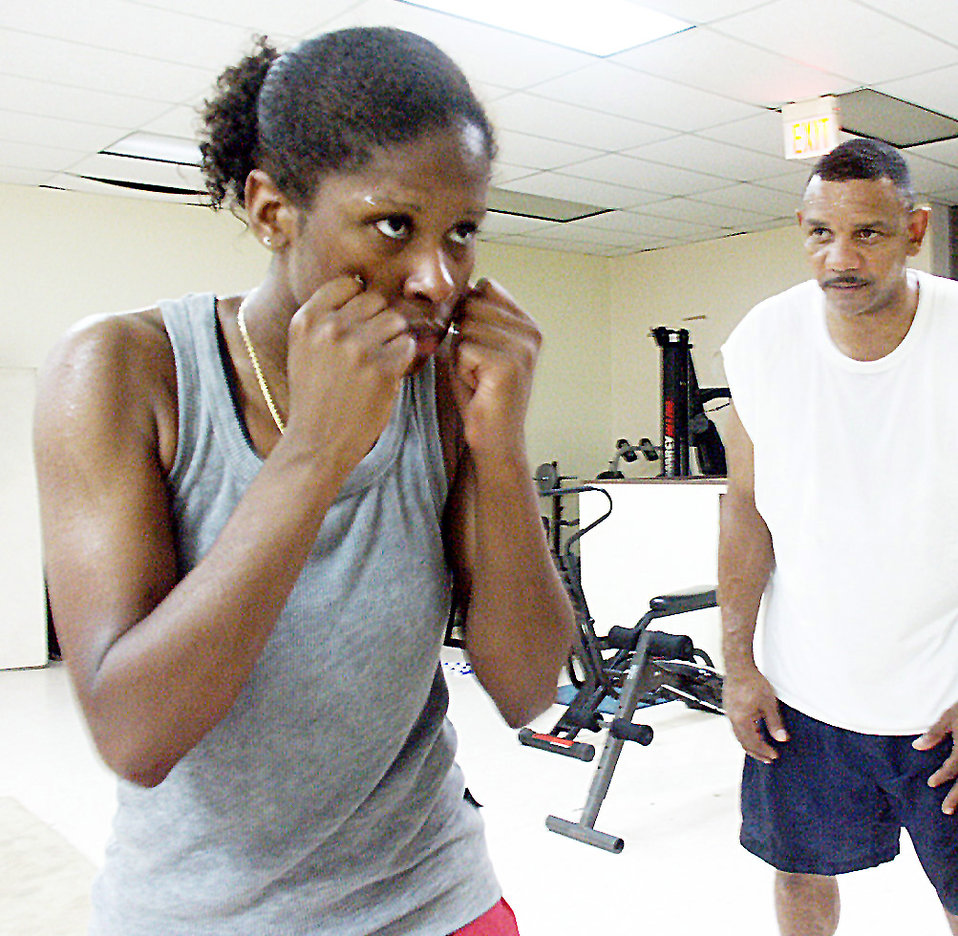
Boxer

EGLIN AIR FORCE BASE, Fla. -- Staff Sgt. Charmaine Carrington takes pointers from her coach, Dennis Walker. Carrington is the first female on the Air Force boxing team. She will box in her first national match June 18. Carrington is a weapons-load crew chief assigned to the 33rd Aircraft Maintenance Squadron here.